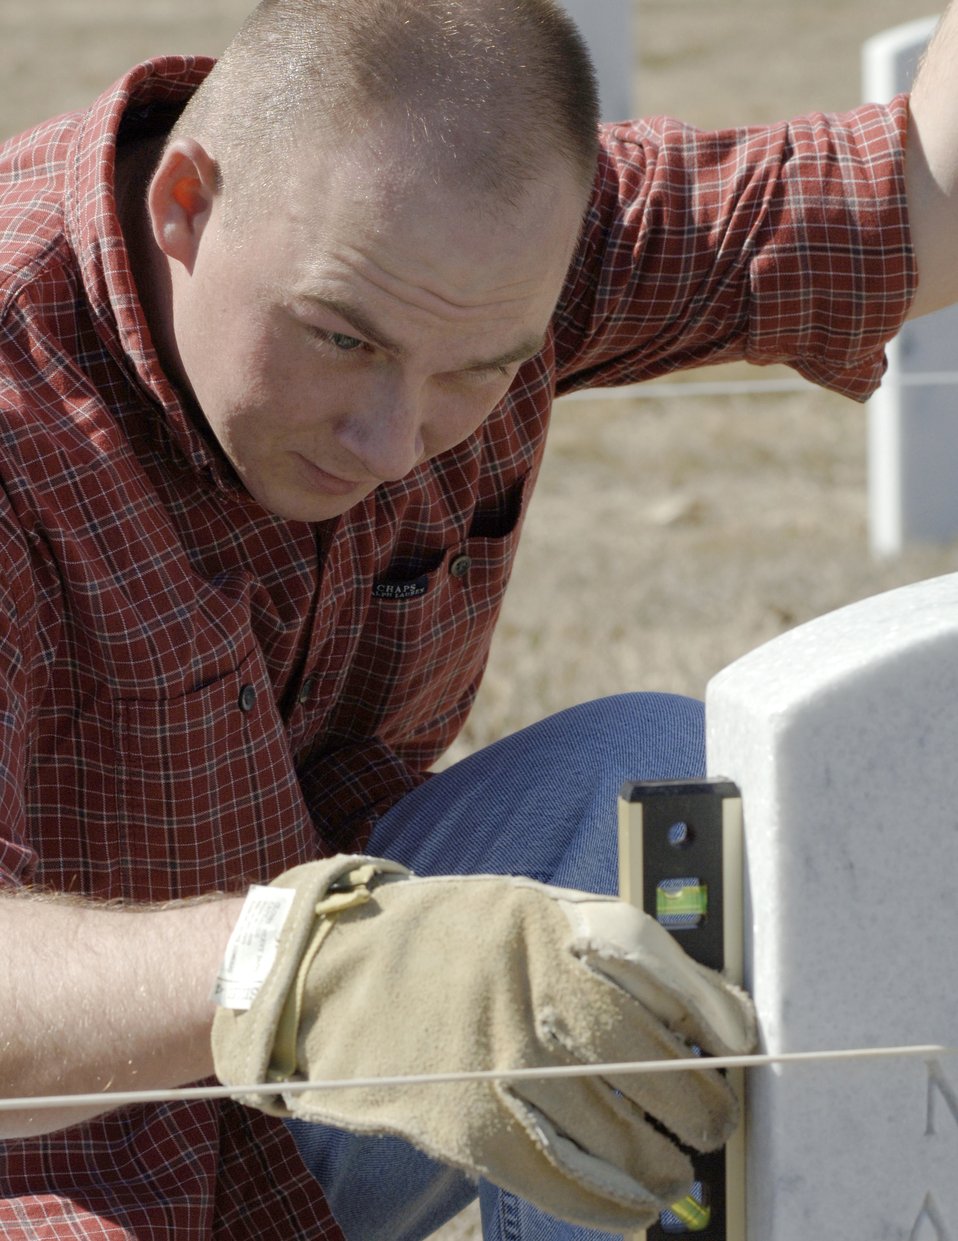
An honorable task

FORT SAM HOUSTON, Texas (AFPN) -- Staff Sgt. Jeremy Roberts levels a headstone at Fort Sam Houston National Cemetery Feb. 8. Sergeant Roberts is a computer programmer with the Cryptologic Systems Group at Lackland Air Force Base, Texas.